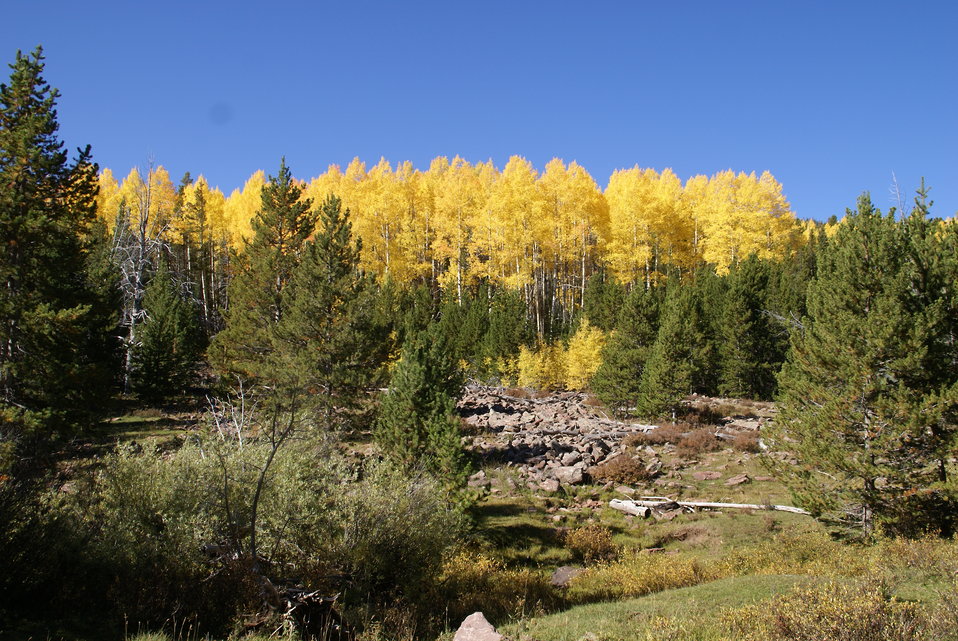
A burst of color can be seen along Red Cloud Loop Road/Forest Service Road 018 in the Vernal Ranger District on the Ashley National Forest, UT.